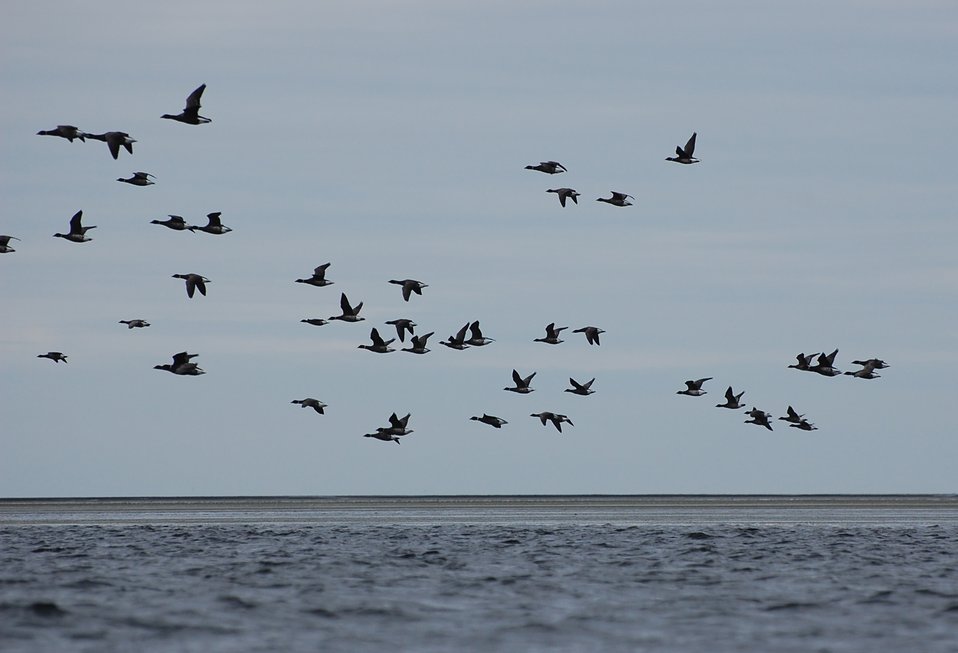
Brant at Izembek Lagoon

Izembek National Wildlife Refuge